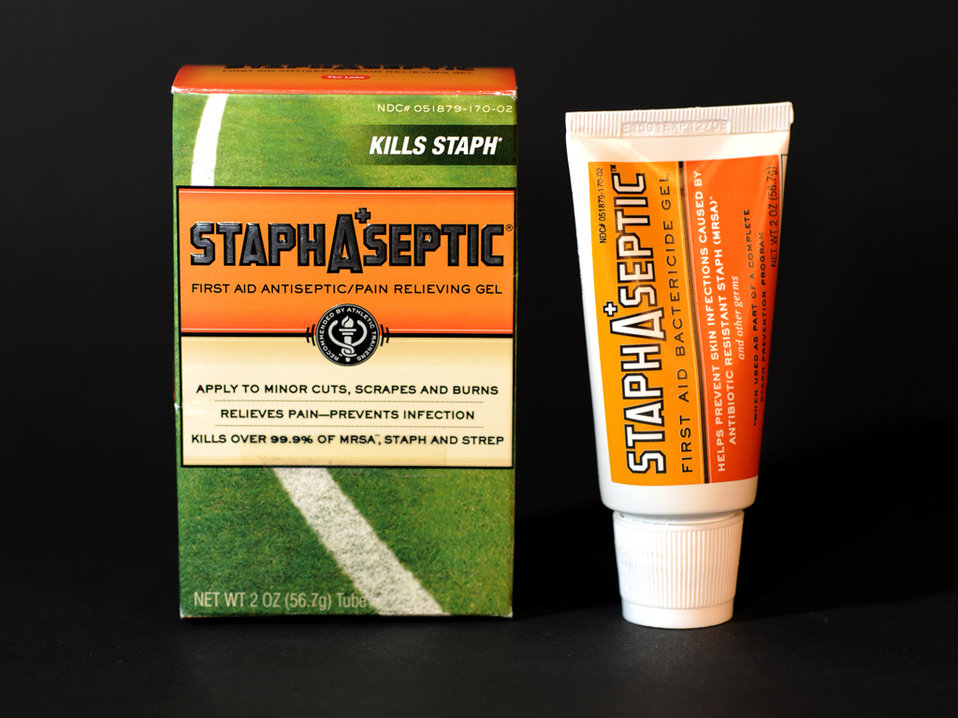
Hand Sanitizers Carry Unproven Claims to Prevent MRSA Infections - Product Photo

The claims on the box that this product kills 99.9% of MRSA, staph, and strep—and on the tube that it helps prevent skin infections caused by MRSA—are unproven, according to FDA. Read this FDA Consumer Update: www.fda.gov/ForConsumers/ConsumerUpdates/ucm251816.htm